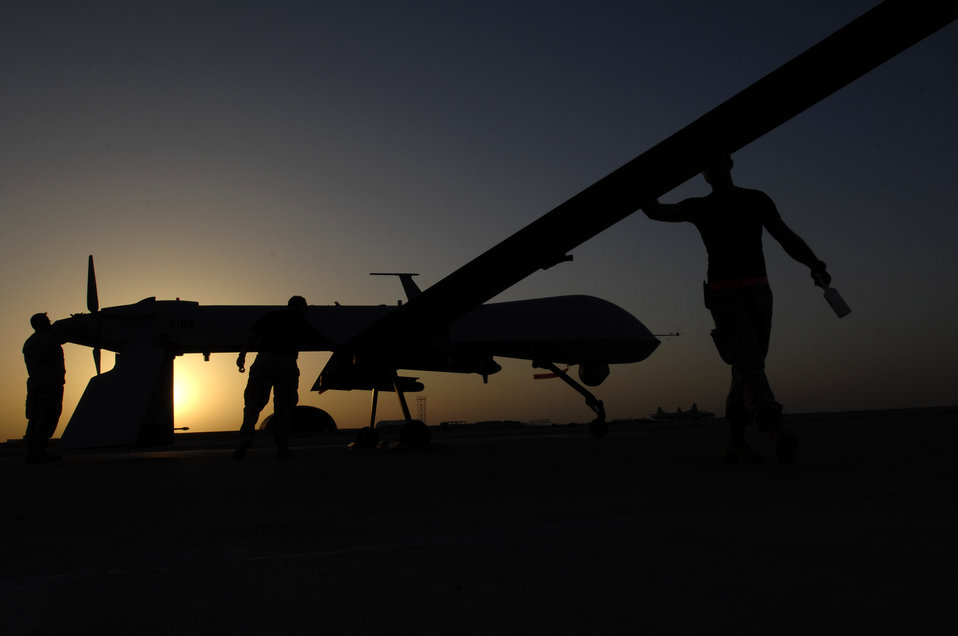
Nighttime Predator

Airman 1st Class Justin Cole, Tech. Sgt. Marcus Cottengim and Chief Master Sgt. Roy Cupper conduct a pre-flight inspection on an MQ-1 Predator Unmanned Aerial Vehicle Nov. 5 at Ali Base, Iraq. The Predators are now fully operational and have begun 24-hour operations. The Airmen are deployed from Creech Air Force Base, Nev.